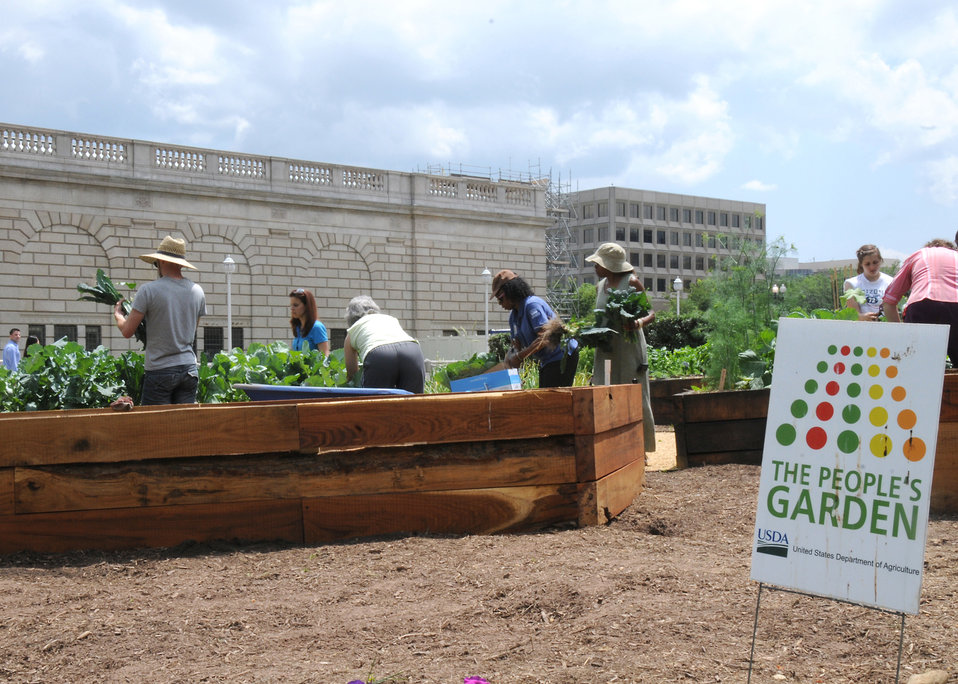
U. S. Department of Agriculture (USDA) employee volunteers harvest the first crop of vegetables from the USDA People’s Garden in Washington, DC, on Friday, May 28, 2010. Volunteers harvest a variety of peas; sugar snap peas, snow peas, and shell peas. All vegetables harvested are donated to local area food banks. USDA photo 10di1384-136.